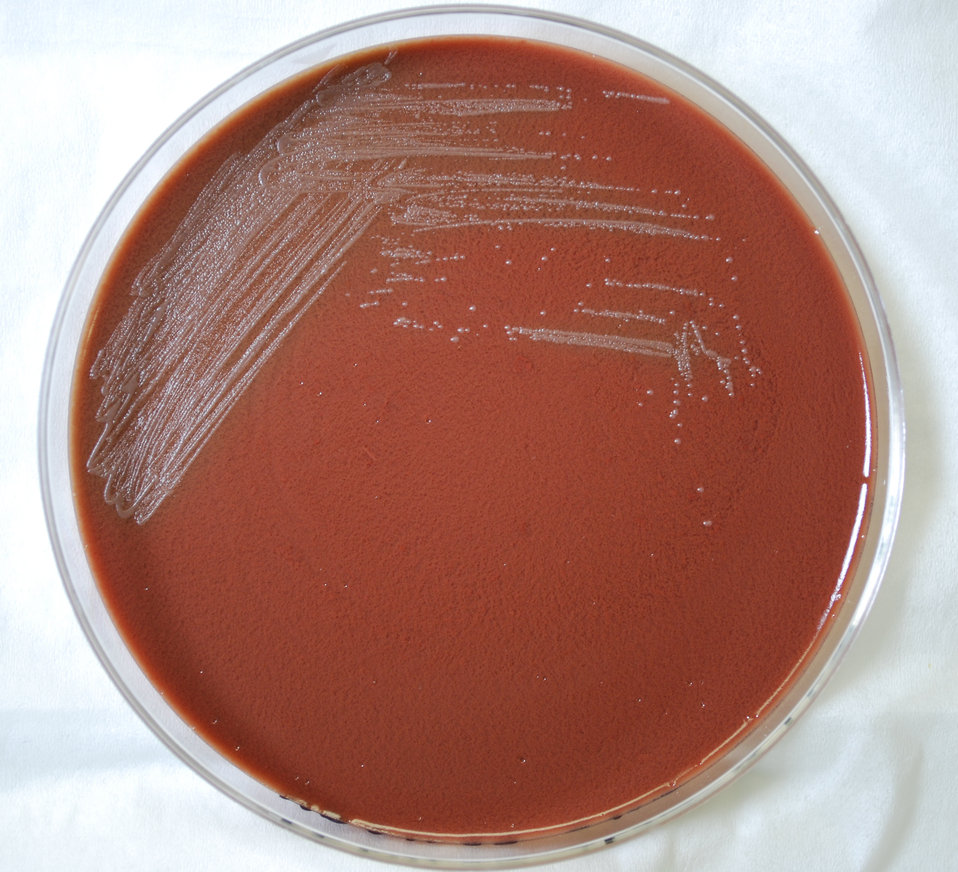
This photograph depicts the colonial morphology displayed by Gram-negative Yersinia pestis bacteria, which was grown on a medium of chocolate agar, for a 48 hour time period, at a temperature of 25�C. See PHIL 12225, for a closer view of these bacterial colonies.Transmission: